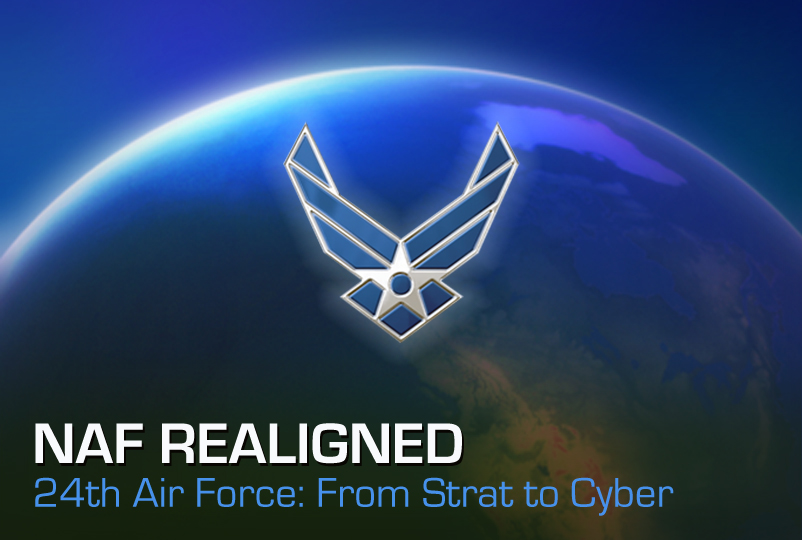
Air Force Week kicks off in New York City